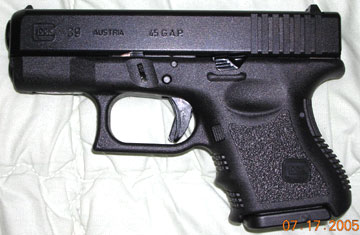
Picture of a Glock-39 Pistol